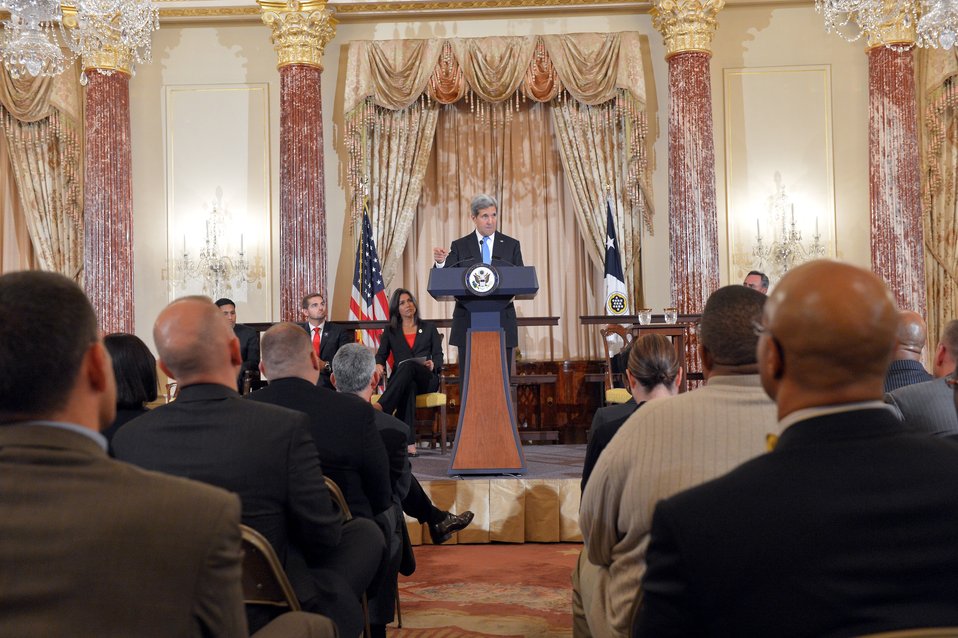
Secretary Kerry Delivers Remarks at a Veterans Partnership Announcement

U.S. Secretary of State John Kerry delivers remarks at a Veterans Partnership Announcement at the U.S. Department of State in Washington, D.C., on October 31, 2013. You can read Secretary Kerry's remarks here: www.state.gov/secretary/remarks/2013/10/216147.htm. Also pictured listening to the Secretary, from left to right are USAID Administrator Rajiv Shah, Department of Veterans Affairs Assistant Secretary Dr. Tommy Sowers, Representative Tulsi Gabbard of Hawaii, and Special Representative for Global Partnerships is Andrew O'Brien.